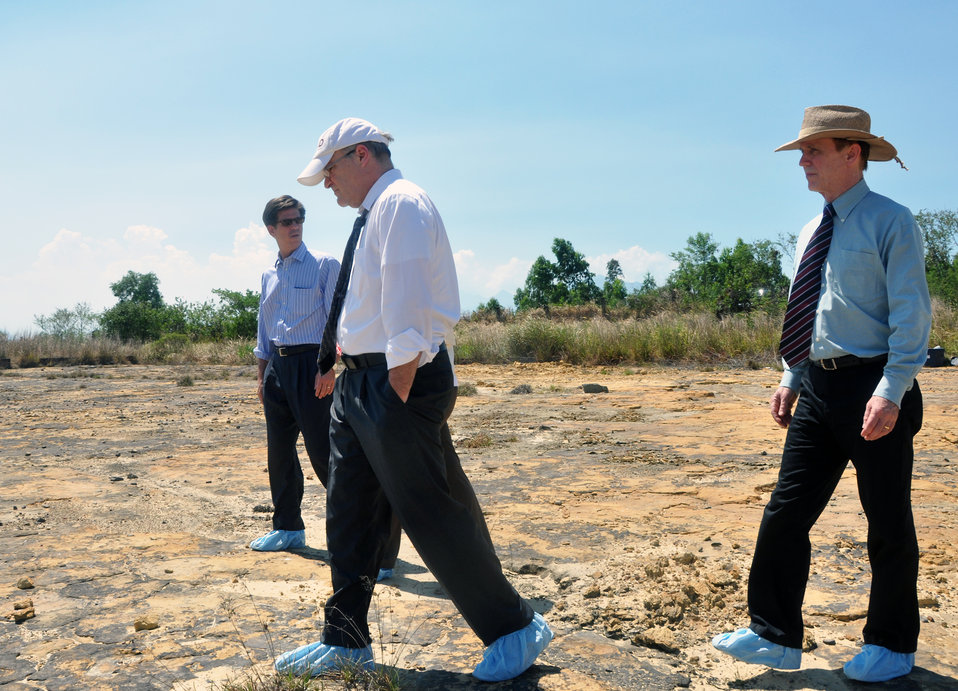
USAID visits dioxin hotspot at Danang Airport

USAID Deputy Administrator Donald Steinberg, center, with Greg Beck, Deputy Assistant Administrator for USAID Asia Bureau, and USAID Vietnam Mission Director Francis Donovan visit Danang Airport on May 8, 2012.